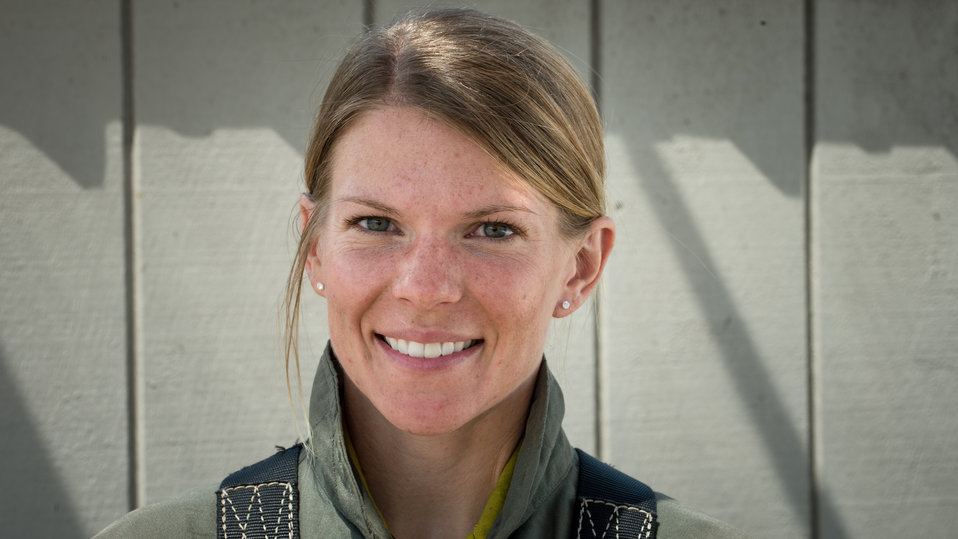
Veteran wildland firefighter rappeller Brianna Carollo attends the U.S. Department of Agriculture (USDA) U.S. Forest Service (USFS) National Helicopter Rappel Program’s Rappel Academy at Salmon Air Base in Salmon, ID on Wednesday, May 14, 2014. From May 12, 2014, 72 veteran rappellers from all over the nation, 30 support staff, and three helicopters with flight crews attend the training at Salmon Air Base. Participants will rappel into the Perreau Creek area. The annual training is delivered in accordance with the National Rappel Operations Guide; strengthen leadership, teamwork, and communications within the rappel community, and produces quality aerial delivered firefighters for use in fire and aviation operations. The USDA Forest Service National Helicopter Rappel Program’s primary mission is initial attack. Rappel crews may be utilized for large fire support, all hazard incident operations, and resource management objectives.